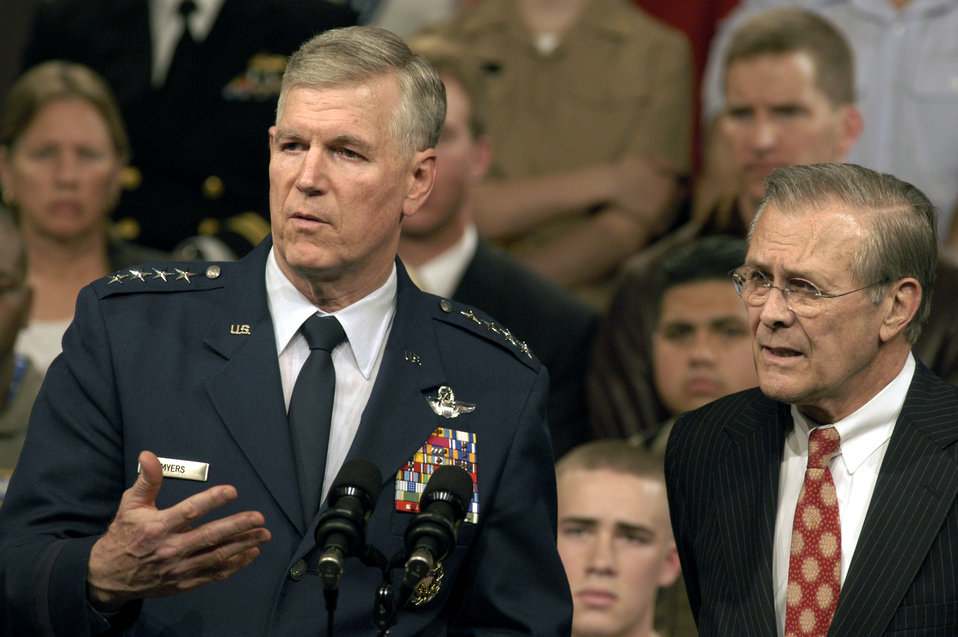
Chairman of the Joint Chiefs of Staff and Secretary of Defense answer questions

WASHINGTON -- Chairman of the Joint Chiefs of Staff Gen. Richard B. Myers, answers a question from the audience of military and Department of Defense civilian employees at a town hall style meeting in the Pentagon on April 17. Myers and Secretary of Defense Donald H. Rumsfeld thanked the Pentagon audience for their contribution to Operation Iraqi Freedom in their opening remarks and then took questions.